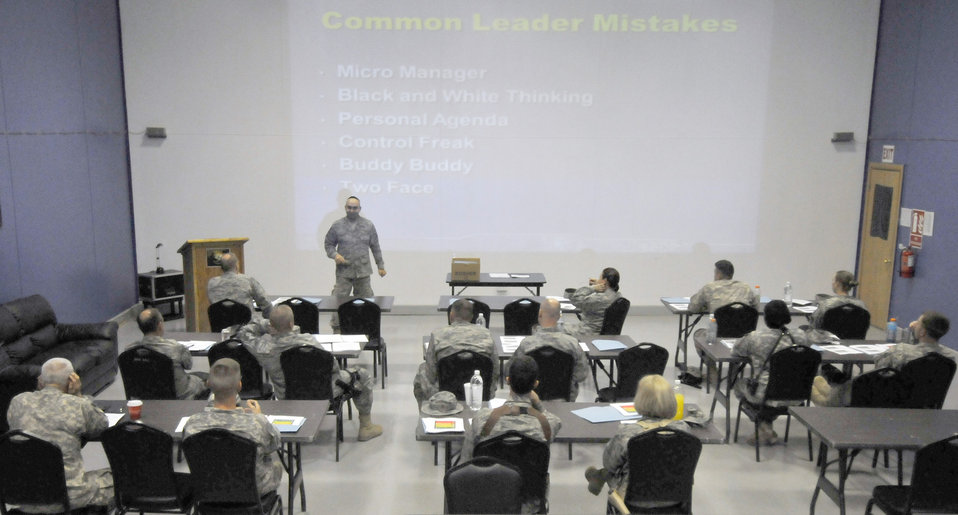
Balad resiliency training

Servicemembers receive resiliency training to help them become better leaders and assist others to deal with high-stress situations by showing them different leadership styles Sept. 14, 2010, at Joint Base Balad, Iraq. The Flash Forward Resiliency Training program uses different teaching techniques including, videos, group discussions and visual presentations.